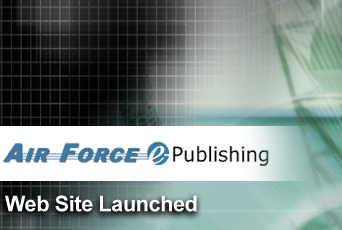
E-Pubs migrates to Air Force Public Web

The Air Force Departmental Publishing Office, or e-Pubs, officially migrated under the Air Force Public Web program Aug. 24 and is now accessible at http://www.e-publishing.af.mil. A link to the new e-Pubs Web site is also available for customers on Air Force Link.